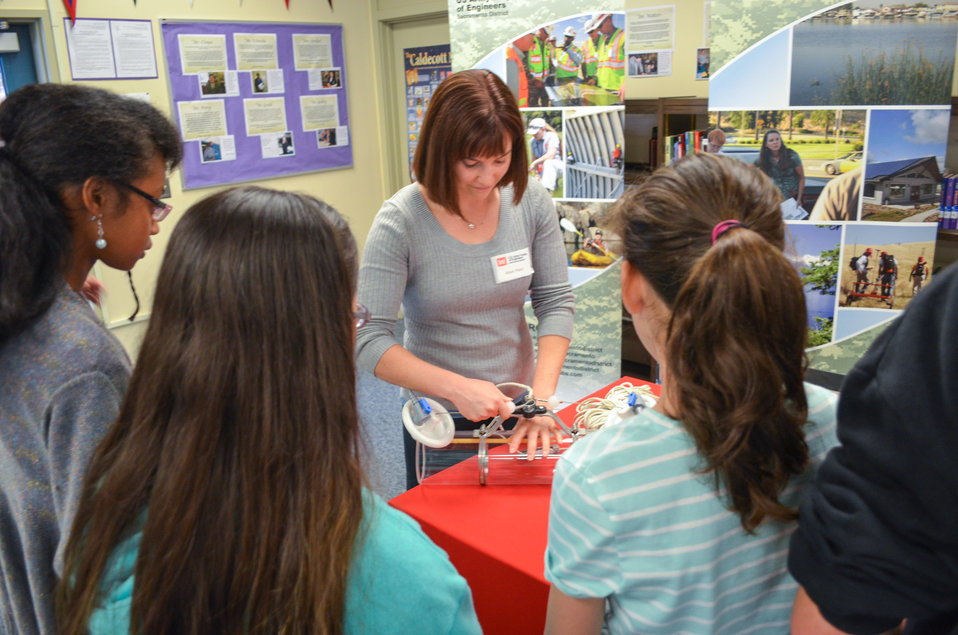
Alison Plant explains water sampling techniques during Science Day

Alison Plant, an environmental engineer with the U.S. Army Corps of Engineers Sacramento District explains a water sampling technique during Science Day at Kit Carson Middle School, in Sacramento Calif., April 8, 2014. Representatives from the Corps and Granite Construction interacted with around 140 seventh and eighth graders in an effort to get students interested in science, technology, engineering and math related fields.